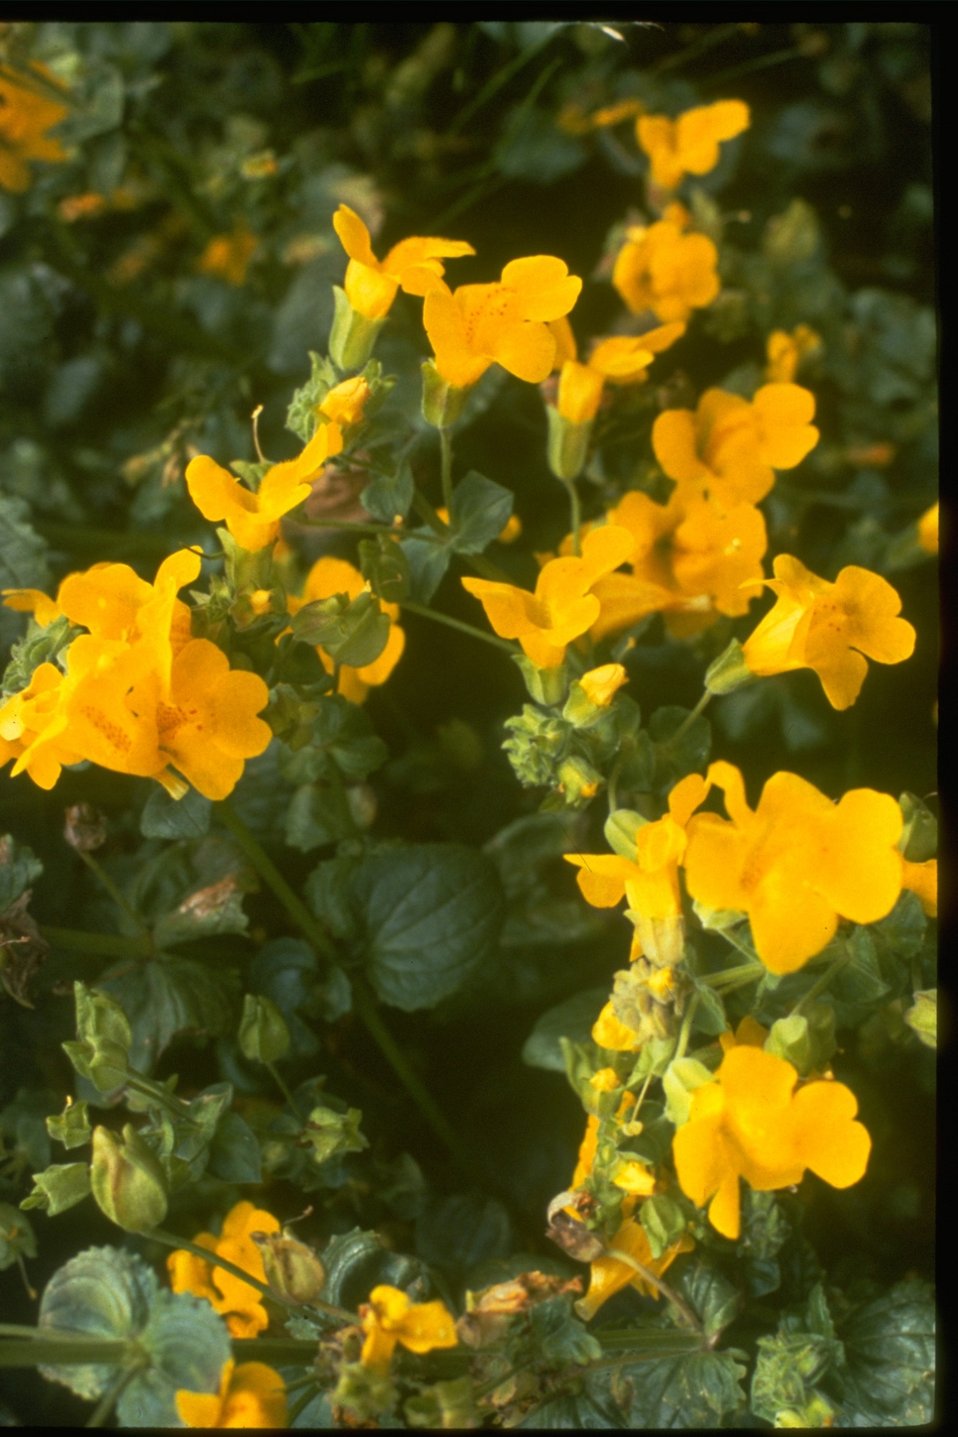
Common Monkey flower.